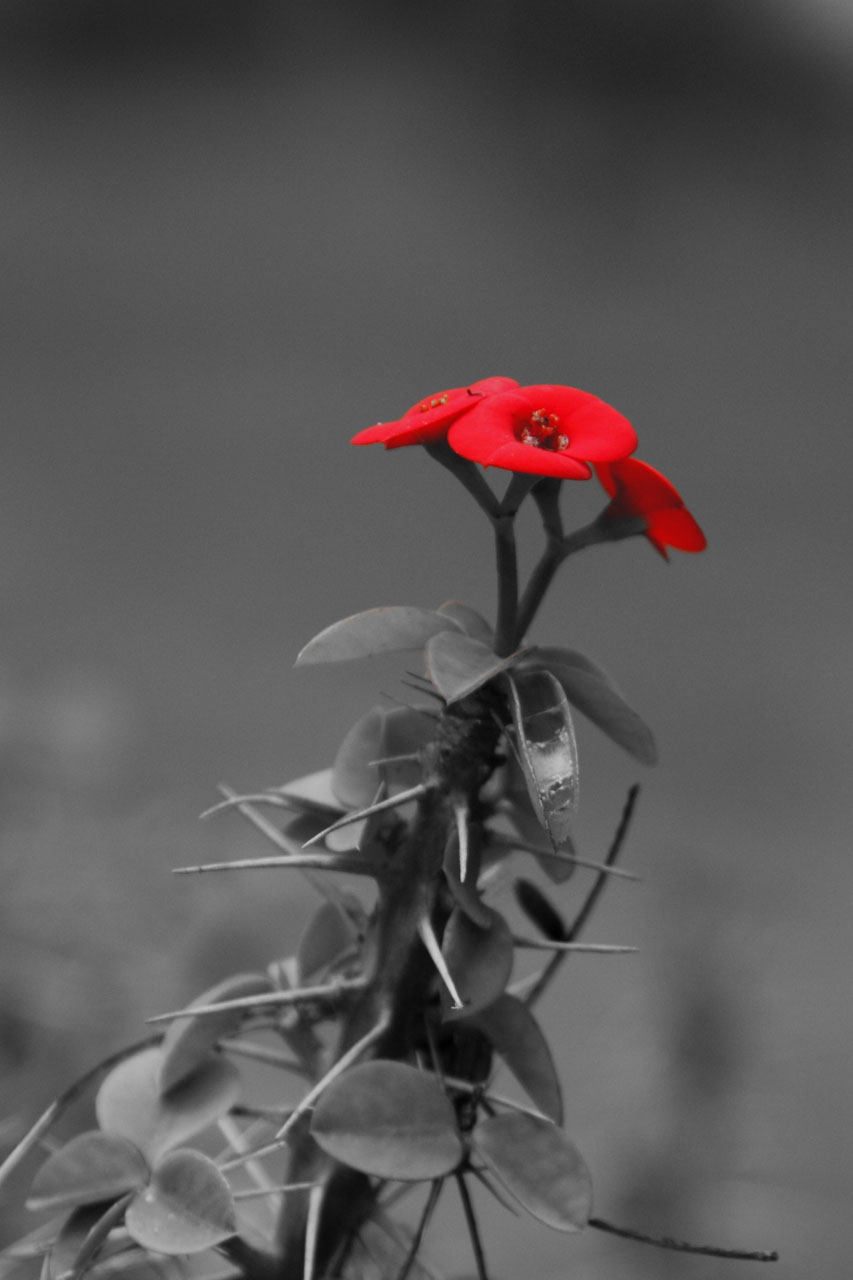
Flower

Red flower.